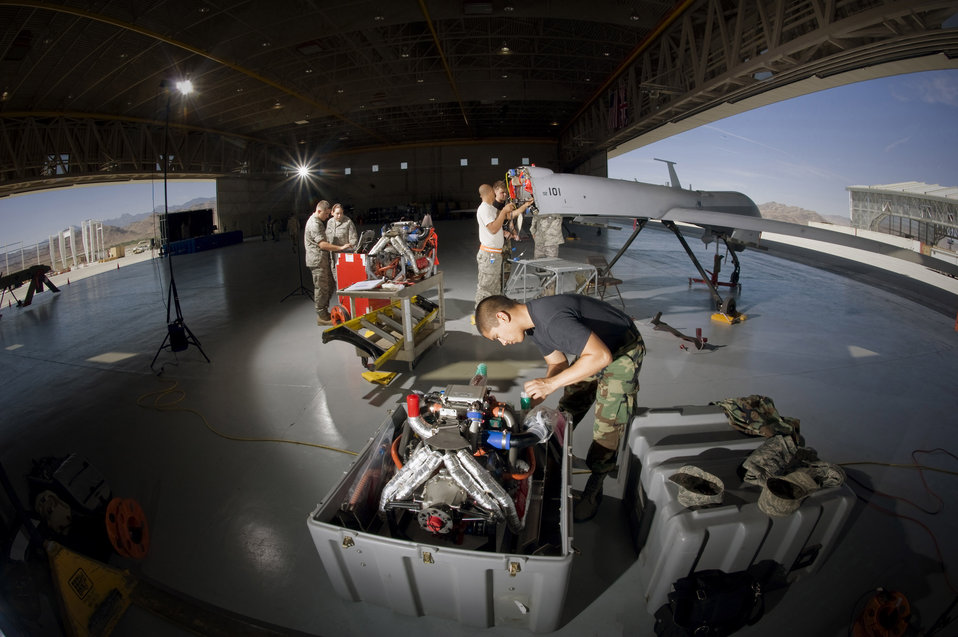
Teamwork is the key

Airmen from the 432nd Aircraft Maintenance Squadron work in teams June 19 on various parts of an MQ-1 Predator at Creech Air Force Base, Nev.